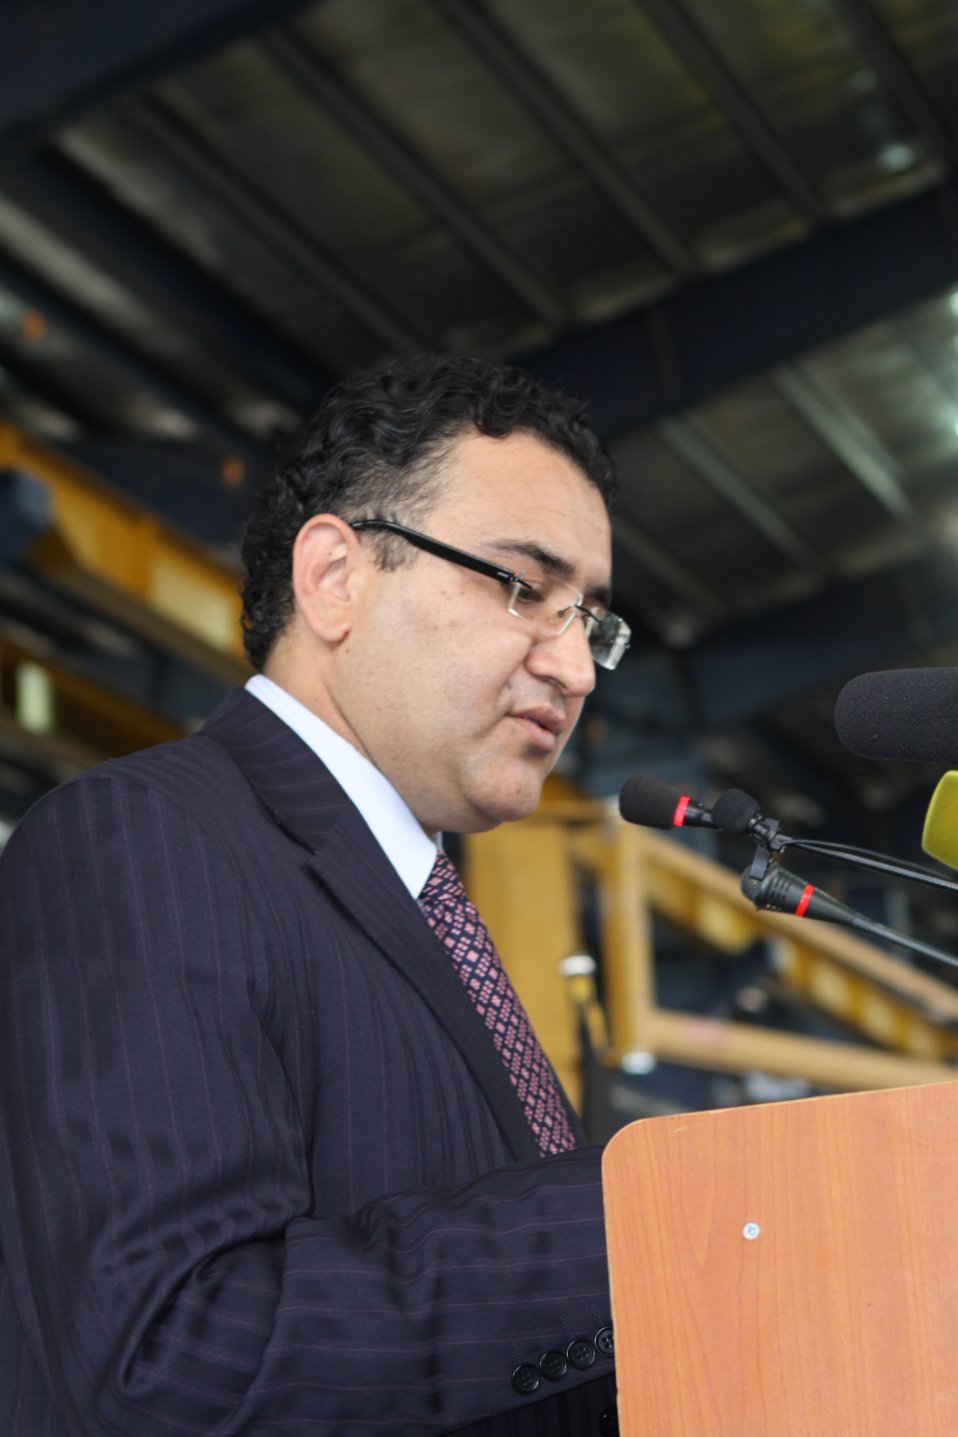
100525 Hirat Marble Conference 177